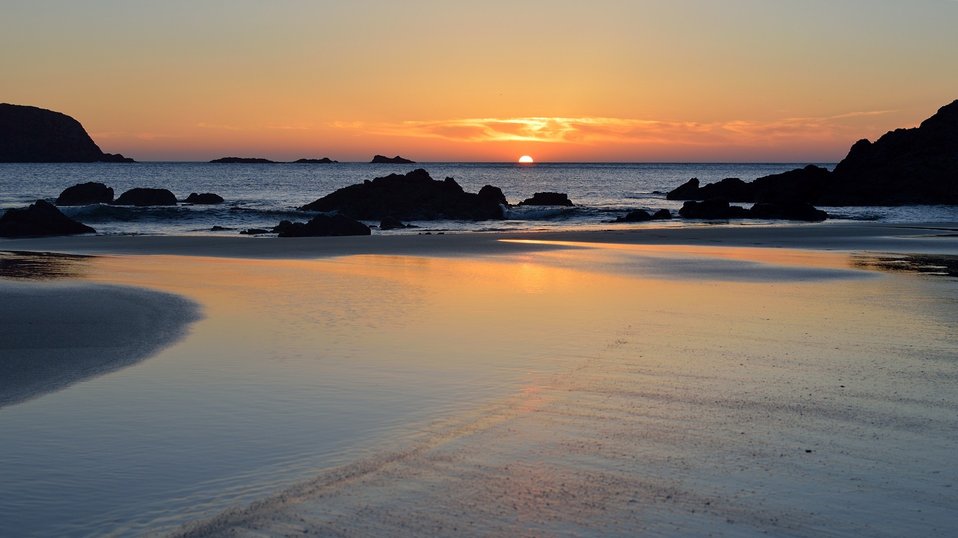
Sunset in pantin

Sunset beach in pantin.